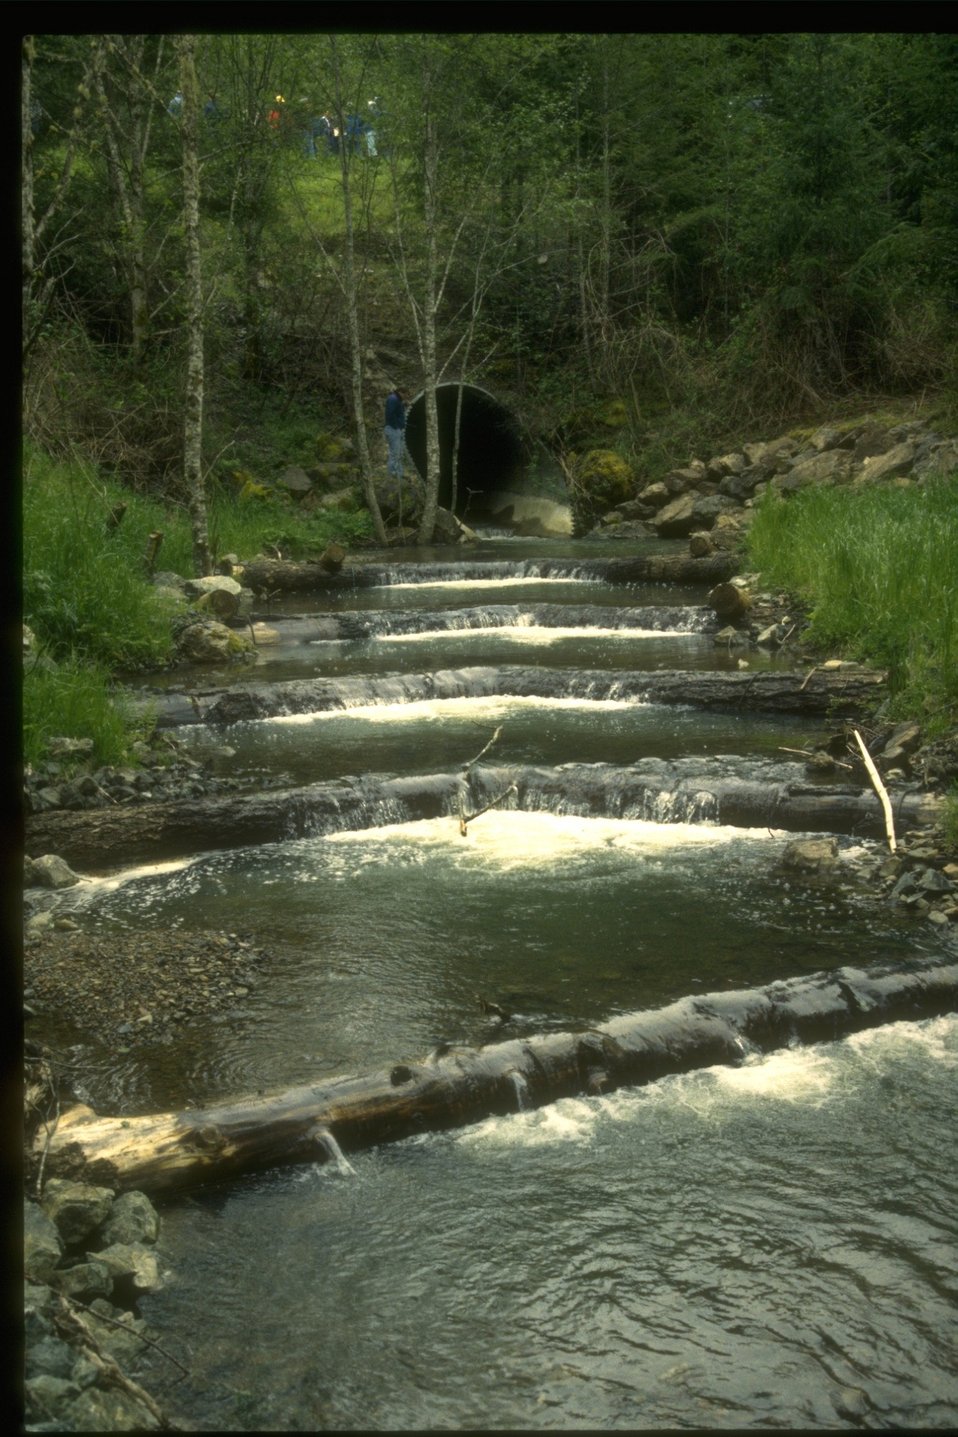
Structures placed in a stream by a fishery.